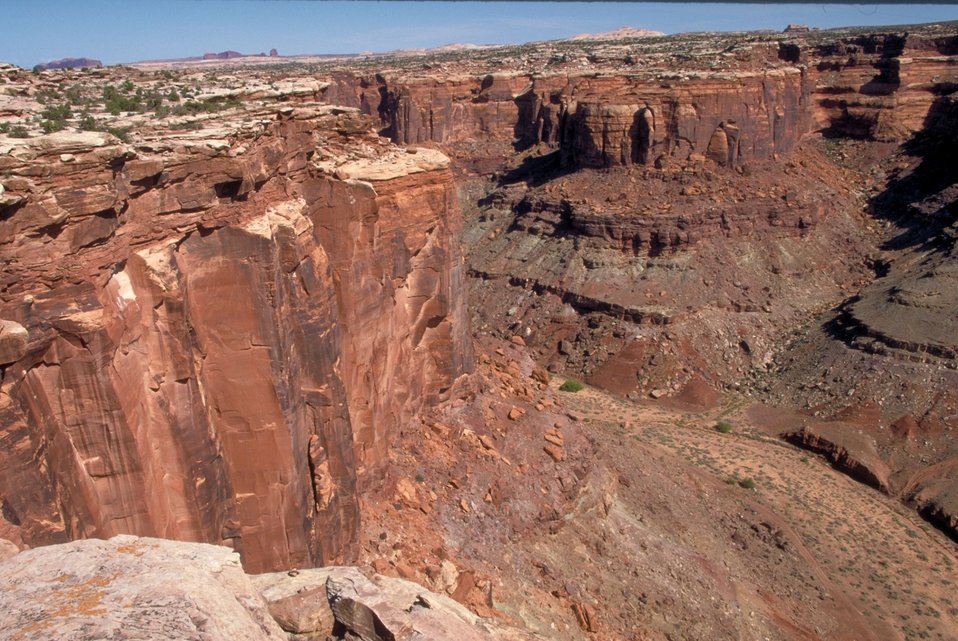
Mouth of Spring Canyon near the Green River near Moab, Utah.